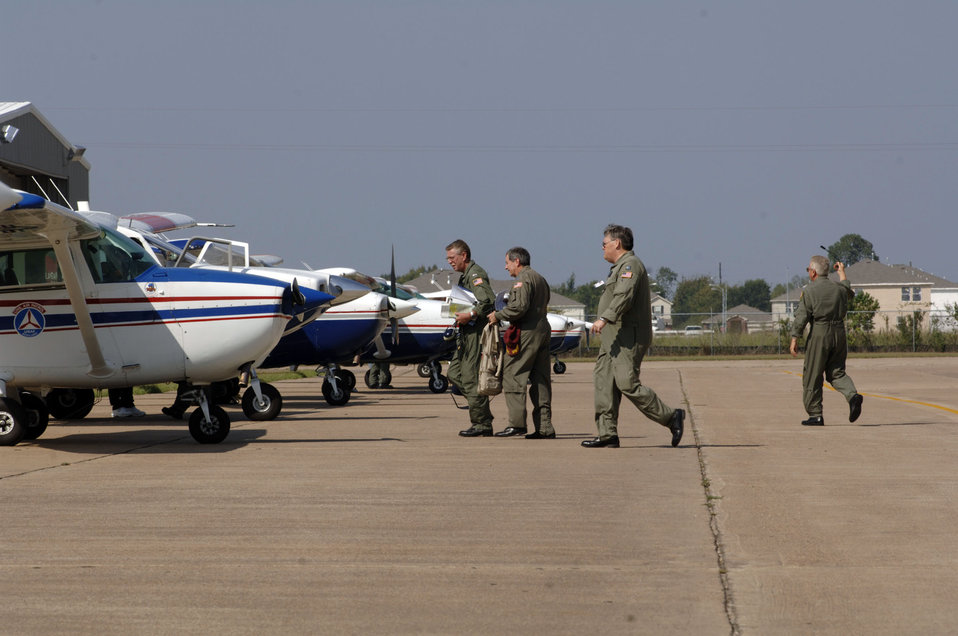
Civil Air Patrol responds

HOUSTON -- Aircrews head to Civil Air Patrol aircraft at the West Houston Airport prior to flying missions assessing Hurricane Rita's impact. Sept. 26 was the second day of flight operations after the Texas CAP was requested to begin operations in Houston.